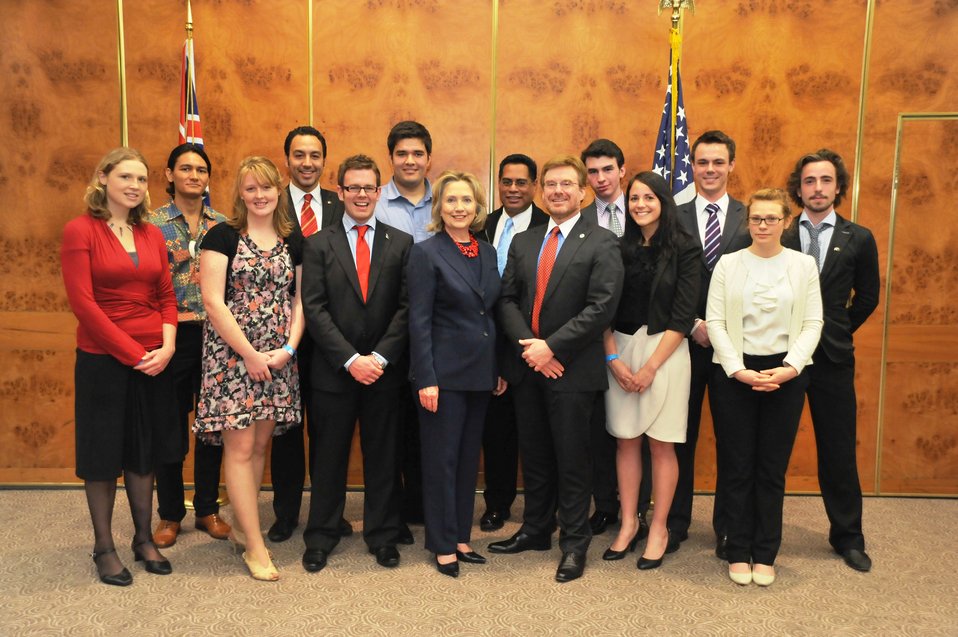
Secretary Clinton and Ambassador Huebner Pose for a Photo With New Zealand Students

U.S. Secretary of State Hillary Rodham Clinton and U.S. Ambassador to New Zealand David Huebner pose for a photo at the “Meet and Greet” with the Ambassador's Advisory Group in Wellington, New Zealand, on November 5, 2010. [State Department photo/ Public Domain]. Individuals featured in the photo include (right to left): Emily Swan, Keoni Kealoha Maheloha, Mahinia-a-rangi Baker, Areti Metuamate, Kieran Brown, Edon Hoppener, Secretary Clinton, Hori Henare-Tamihana, Ambassador Huebner, Samuel Williamson, Horiana Irwin, Nick Chapman, Kate Stone, and Andrew Goddard.